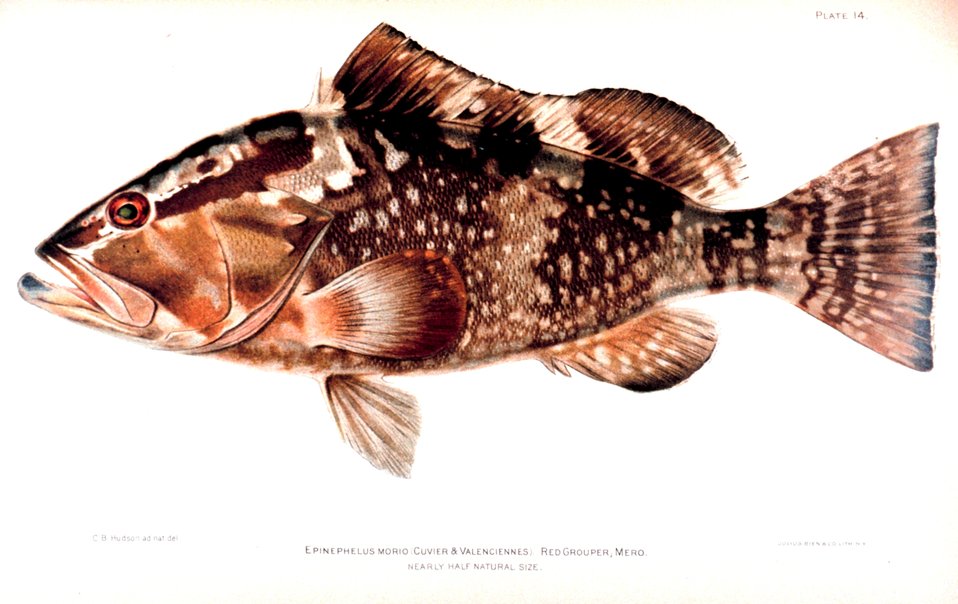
Epinephelus morio (Cuvier & Valenciennes). Red Grouper; Mero. In: 'The Fishes of Porto Rico', by Barton Warren Evermann and Millard Caleb Marsh. Bulletin of the United States Fish Commission, Vol. XX for 1900. First Part. P. 350, Plate 14.